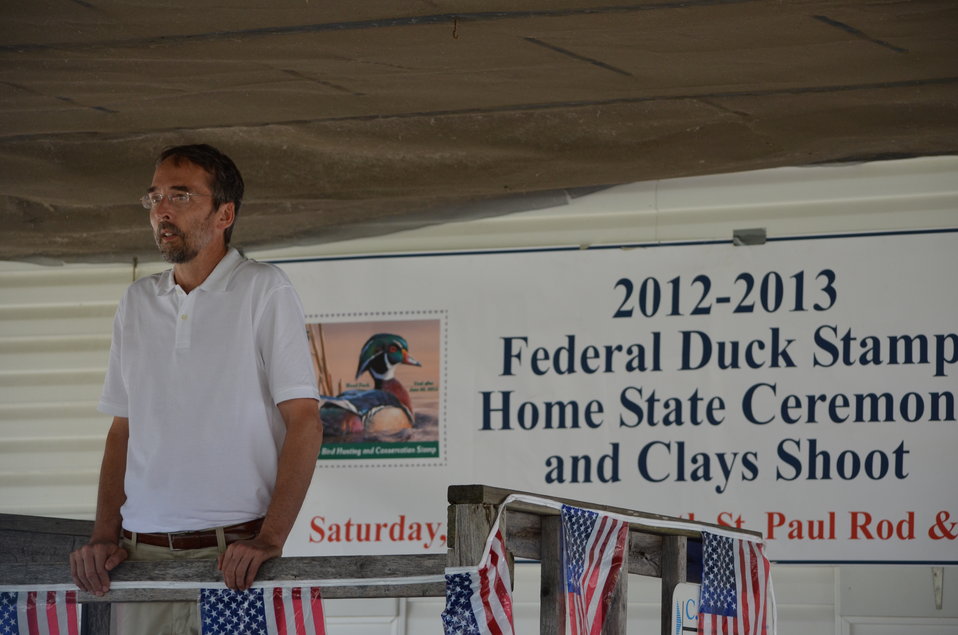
2012 Federal Duck Stamp artist Joe Hautman addresses members of the wildlife conservation community, shooters, and Duck Stamp enthusiasts.